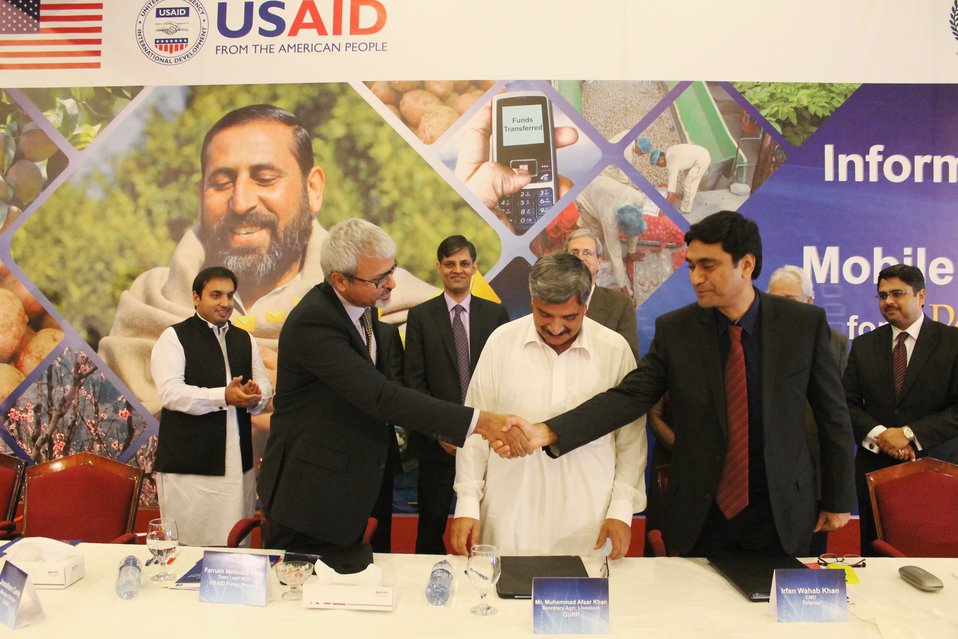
Pilot for Information and Financial Mobile Solutions - MoU Signing

Through this MoU, the USAID Firms Project will launch the first of its kind Pilot for Information and Financial Mobile Solutions in Swat